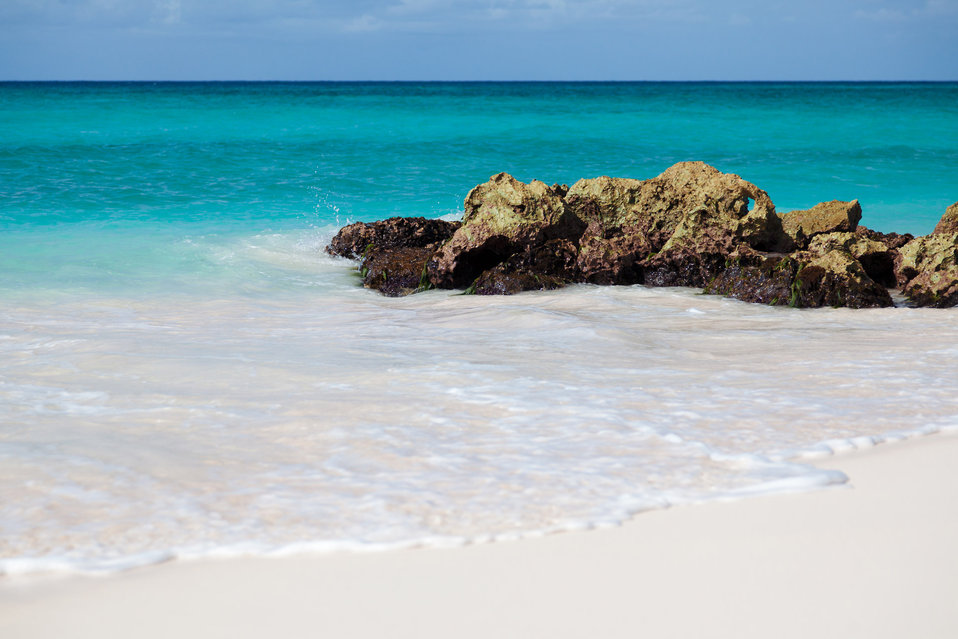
Rocks in azure sea

Some rocks in turquoise sea with white beach in the foreground.